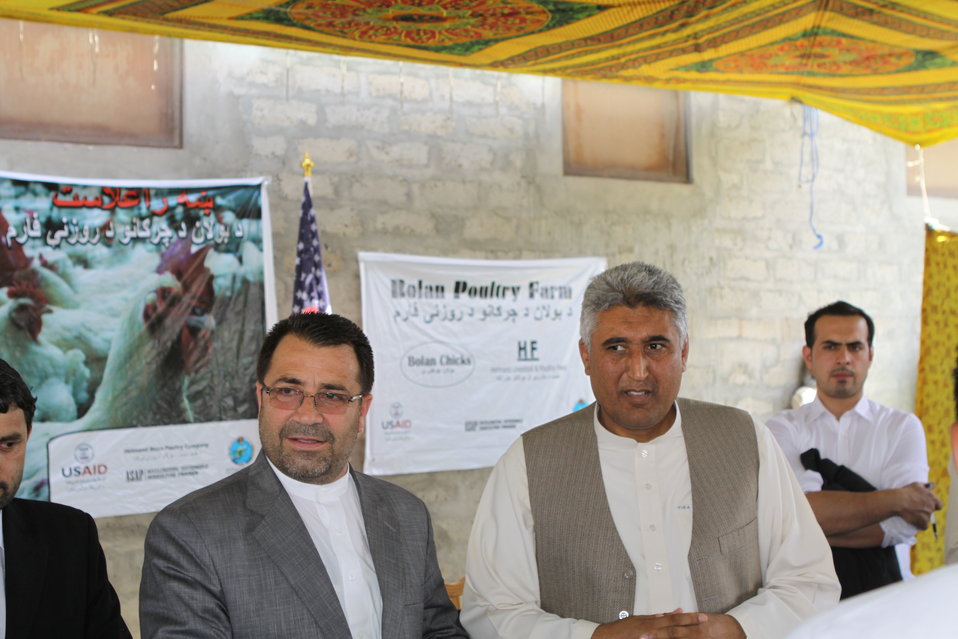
Bolan Poultry Farm